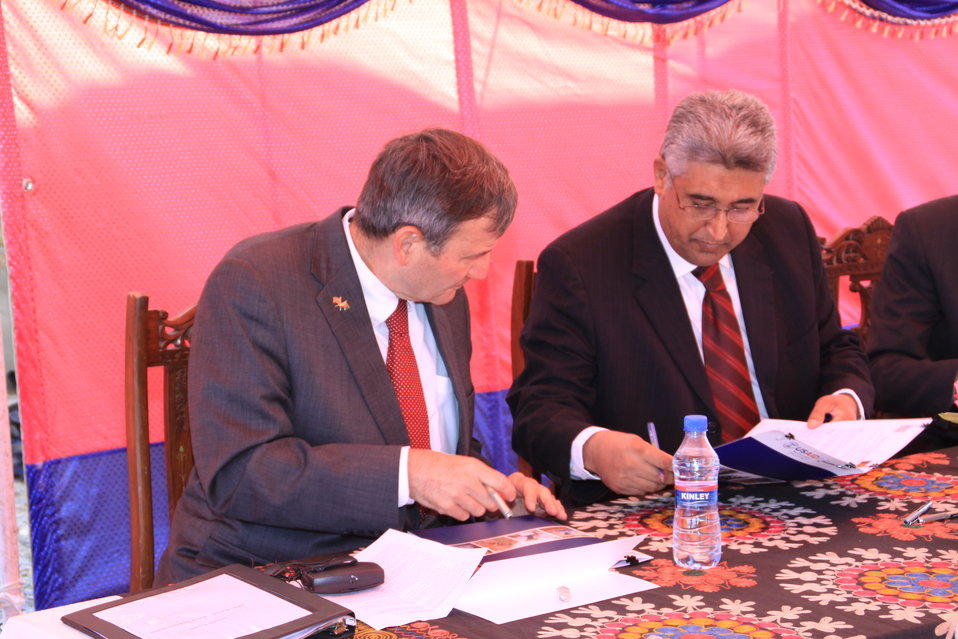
AVIPA Plus Wheat Seed Distribution 101005

US Ambassador Karl Eikenberry and USAID Acting Mission Director Kevin Brownawell joined the Minister of Agriculture, Irrigation and Livestock, H.E. Minister Mohammed Rahimi in signing a Memorandum of Understanding and distributing vouchers to area farmers for wheat and fertilizer.

US Ambassador Karl Eikenberry and USAID Acting Mission Director Kevin Brownawell joined the Minister of Agriculture, Irrigation and Livestock, H.E. Minister Mohammed Rahimi in signing a Memorandum of Understanding and distributing vouchers to area farmers for wheat and fertilizer.